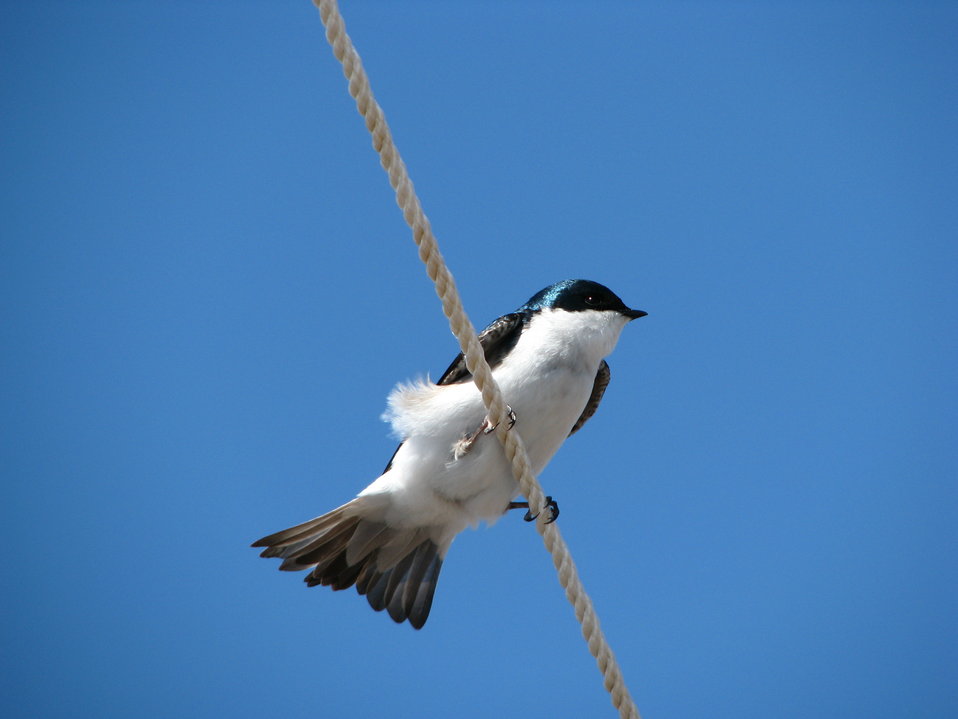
Tree swallow perched on tie down

USFWS Yukon Delta NWR